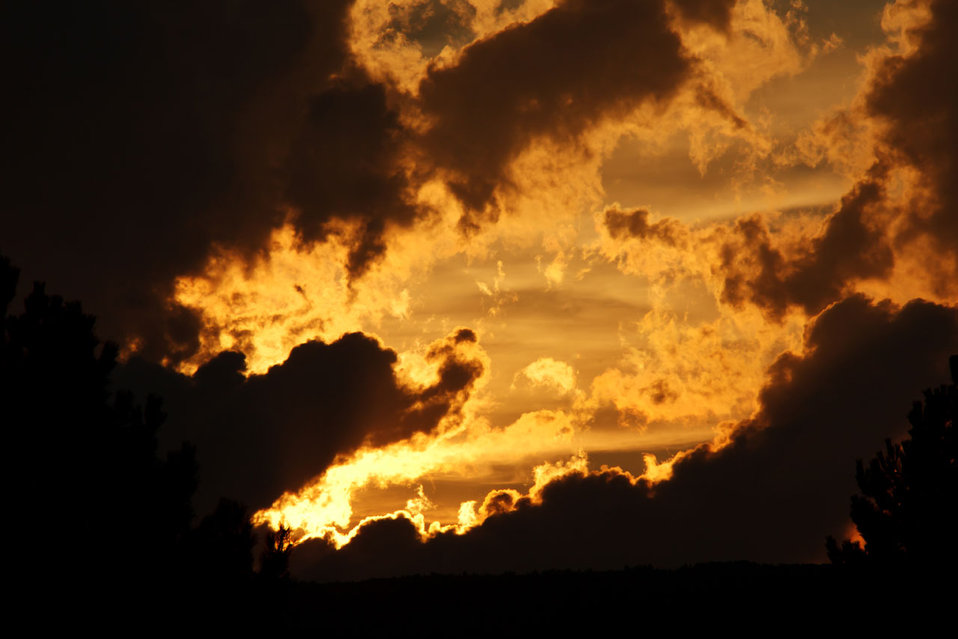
Dramatic sky

Colorful sunset with storm clouds.